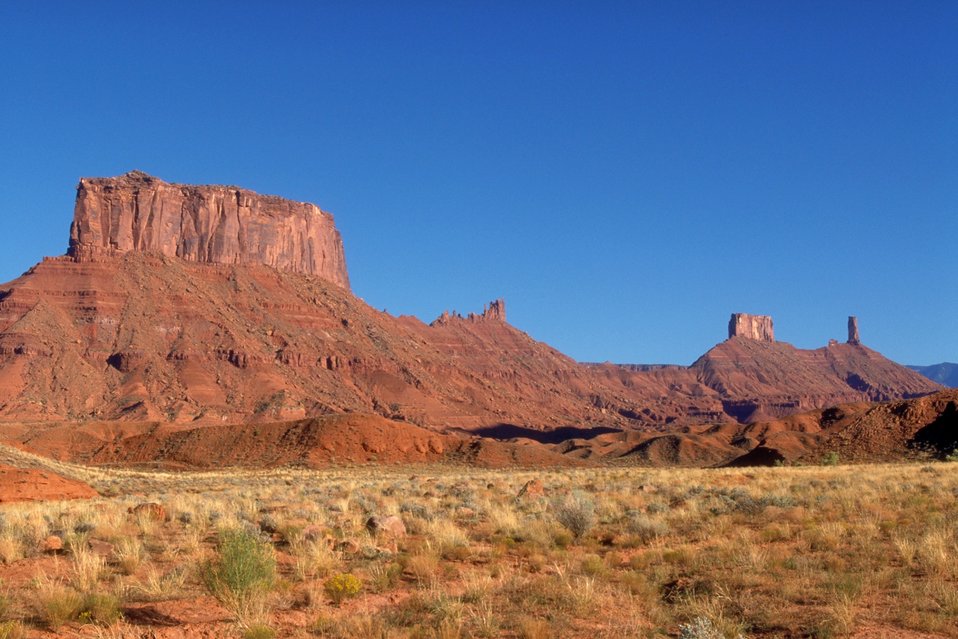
Buttes, Castle Valley area near Moab, Utah.